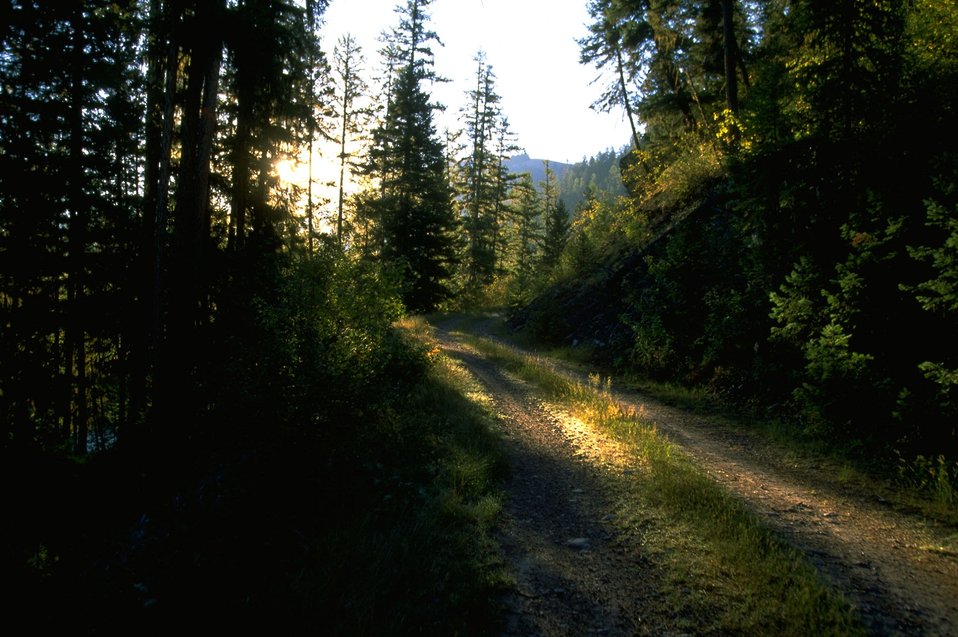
Morning on Road to the Buffalo non-motorized trail along the Blackfoot River